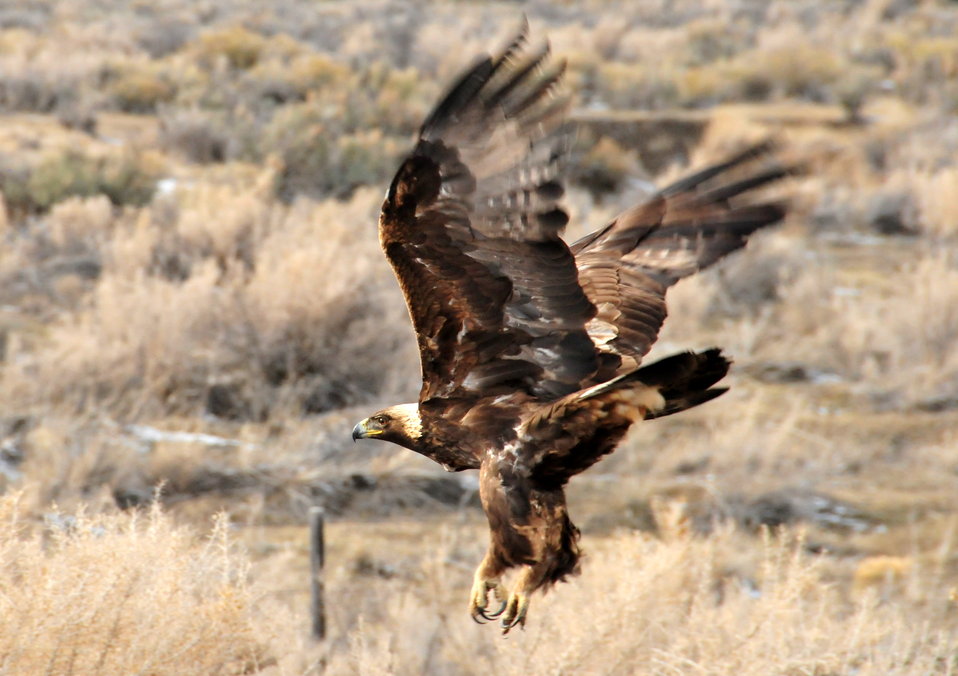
Golden eagle

A golden eagle along Highway 189 south of Kemmerer Wyoming. A large concentration of mule deer winter here and deer - vehicle collisions are common. The Wyoming Department of Transportation does a tremendous job of warning motorists and quickly removing deer that have been hit and killed, preventing further collisions with bald and golden eagles, black-billed magpies and ravens that are feeding on the dead deer. This golden eagle had been feeding on a dead deer that had not yet been removed.